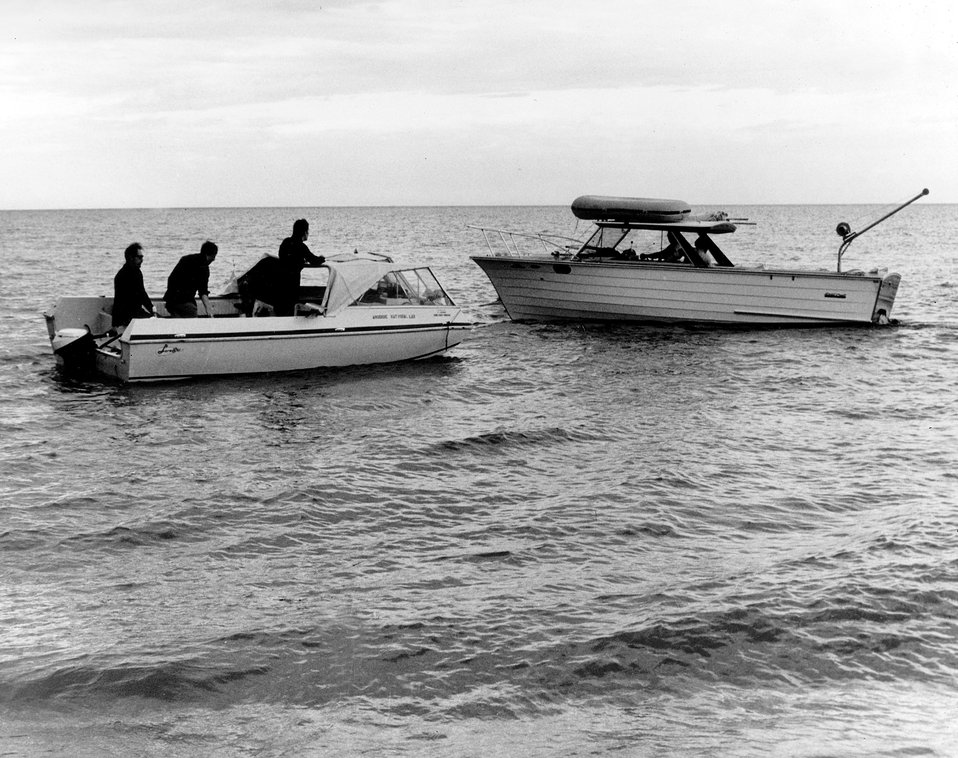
Vessels carrying researchers from Argonne move into position prior to beginning a series of experiments aimed at determining effects of thermal discharges from power plants on Lake Michigan.
c.1972